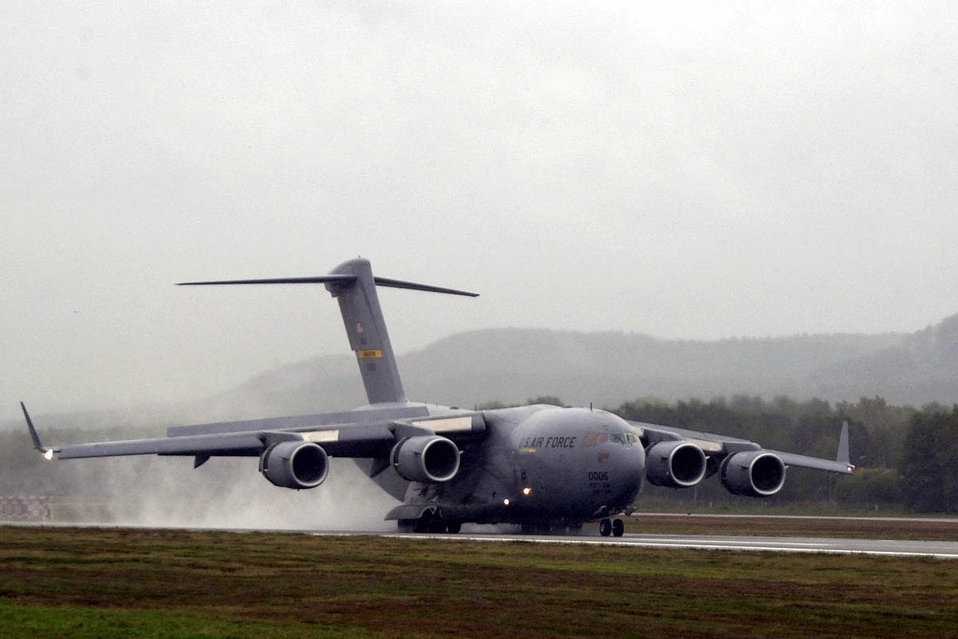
Returning home

RAMSTEIN AIR BASE, Germany -- A C-17 Globemaster III lands after humanitarian airdrops in Afganistan on Oct. 8, 2001.